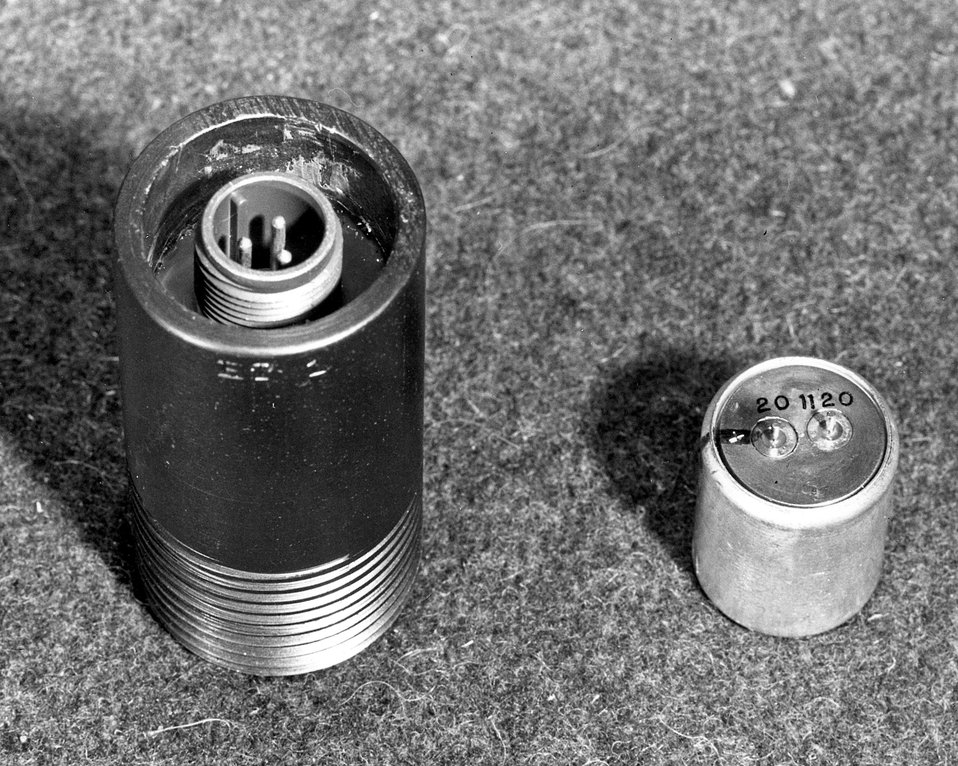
(Inter-agency work)...'Geophone' type sensing elements for vibration monitoring have been designed by the Paducah Gaseous Diffusion Plant, Paducah, Kentucky. The elements are rugged, sensitive, and inexpensive. Circa 1972.